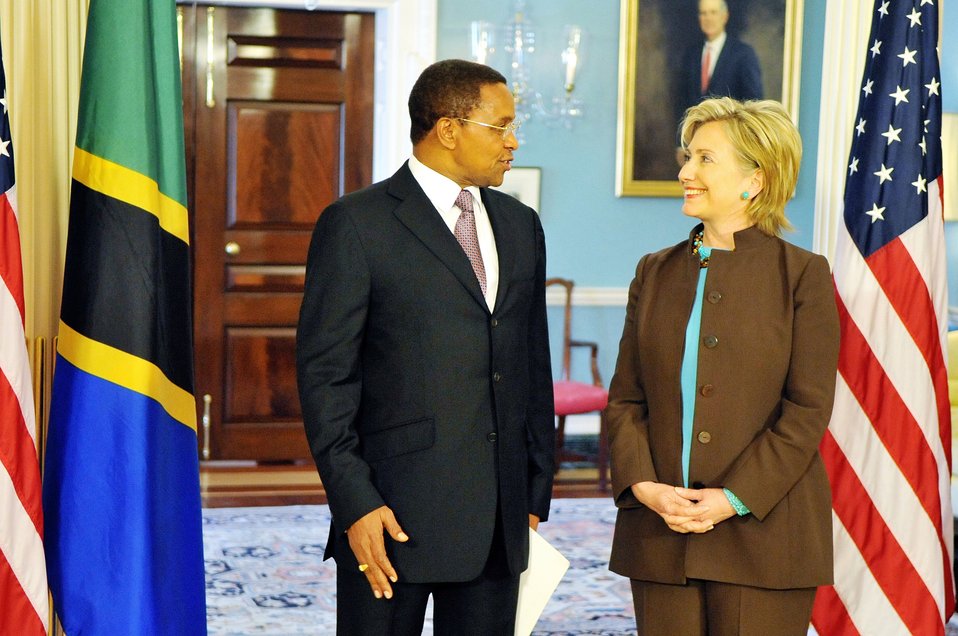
Secretary Clinton Meets With Tanzanian President

U.S. Secretary of State Hillary Rodham Clinton hosts a bilateral meeting with Tanzanian President Jakaya Kikwete in the Treaty Room of the U.S. Department of State in Washington, DC May 21, 2009.